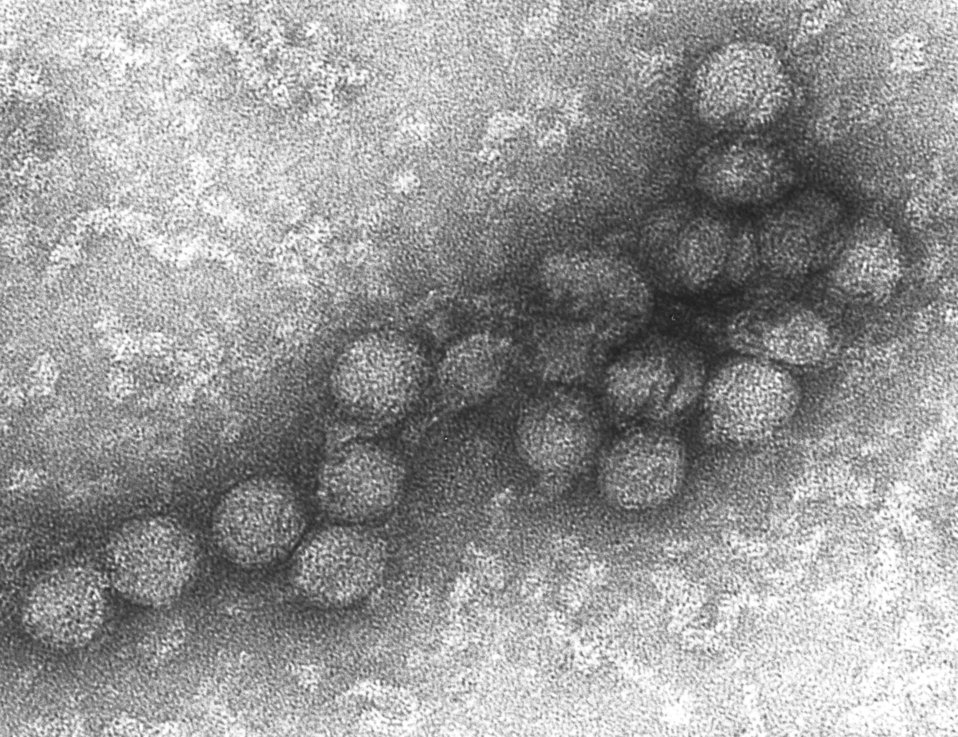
This is a transmission electron micrograph (TEM) of the West Nile virus (WNV). See PHIL 10701 for a colorized view of this image.